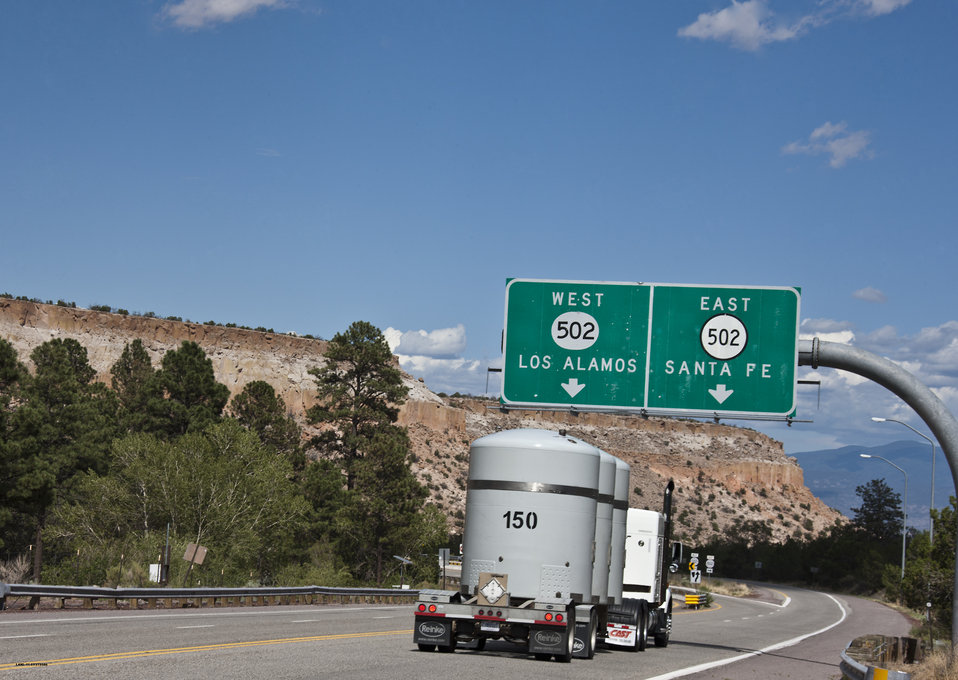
1000th Shipment of TRU Waste from LANL